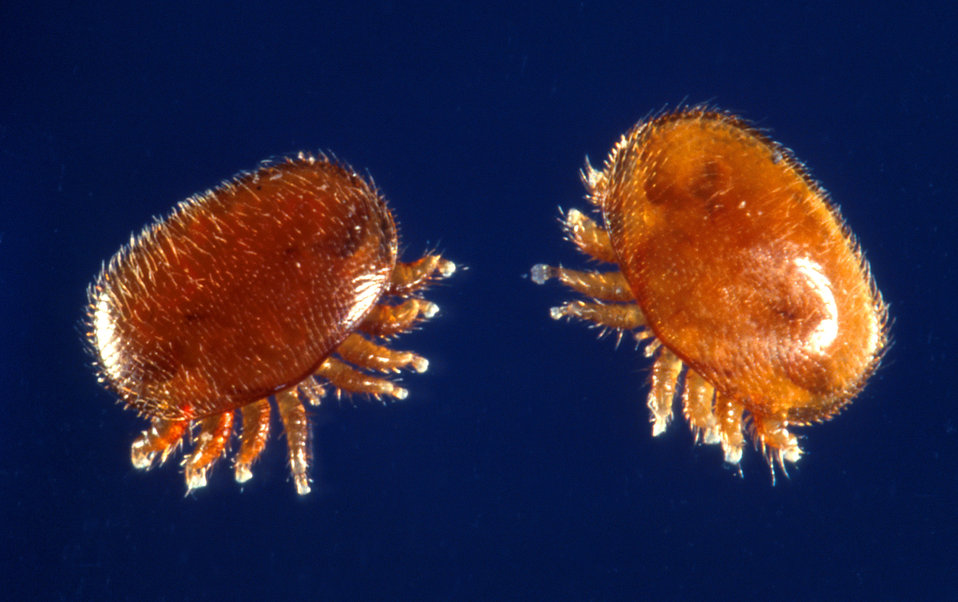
Varroa jacobsoni mite is a parasite that attacks Asian honey bees and can weaken or destroy the colony.